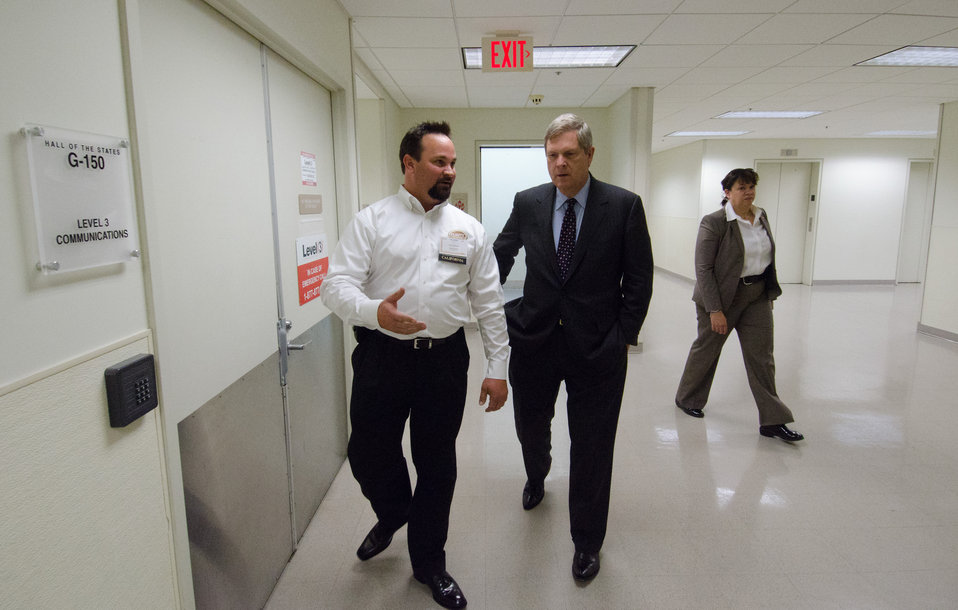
Kerman, CA farmer Steve Koretoff (white shirt) was able to to meet with U.S. Department of Agriculture Secretary Tom Vilsack (center) after the Secretary told of how when he was an Iowa lawyer, in the 1980's a farmer came to see him because the farmer was going to loose his farm after expanding operations so his youngest, seventh, and only son who wanted to be a farmer could do so, but when the farm got financially overextended the son took his own life because he felt responsible. This experience is one of Secretary Vilsack's many motivators, and struck a cord with Mr. Koretoff during the Organic Trade Association’s 2011 Policy Conference at the Hall of States, on Wednesday, April 6, 2011, in Washington, DC. They exchanged contact information to stay in communication with each other.